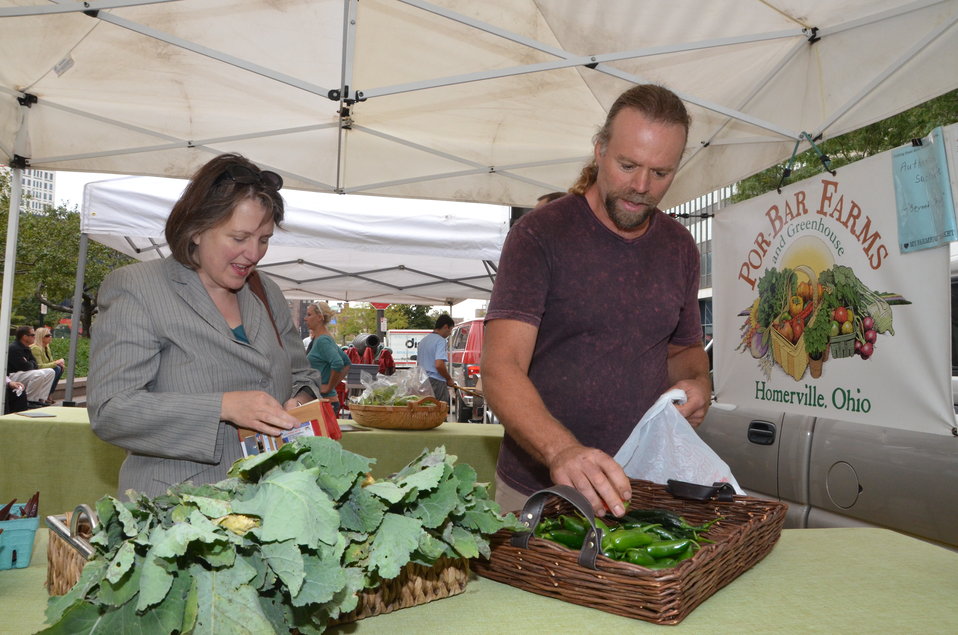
Agriculture Deputy Secretary Kathleen Merrigan buys produce from Por-Bar Farms and Greenhouse in Homerville, OH owner Kevin Leamer at Cleveland, Ohio's Downtown Farmers' Market at Public Square on Sept. 21, 2012.